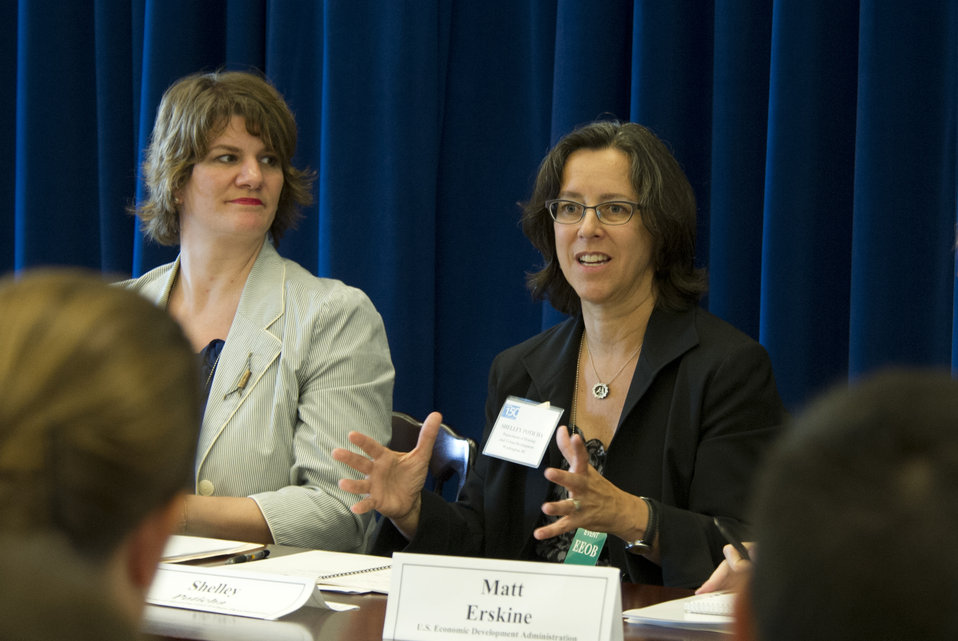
Maria Zimmerman (left), Deputy Director of the Office of Sustainable Housing and Communities, U.S. Department of Housing and Urban Development (HUD) listens to Shelly Poticha, Director of Office of Sustainable Housing and Communities, HUD speaking at the White House Forum on Regional Innovation in Rural America at the Eisenhower Executive Office Building, in Washington D.C., on Wednesday, June 13, 2012.